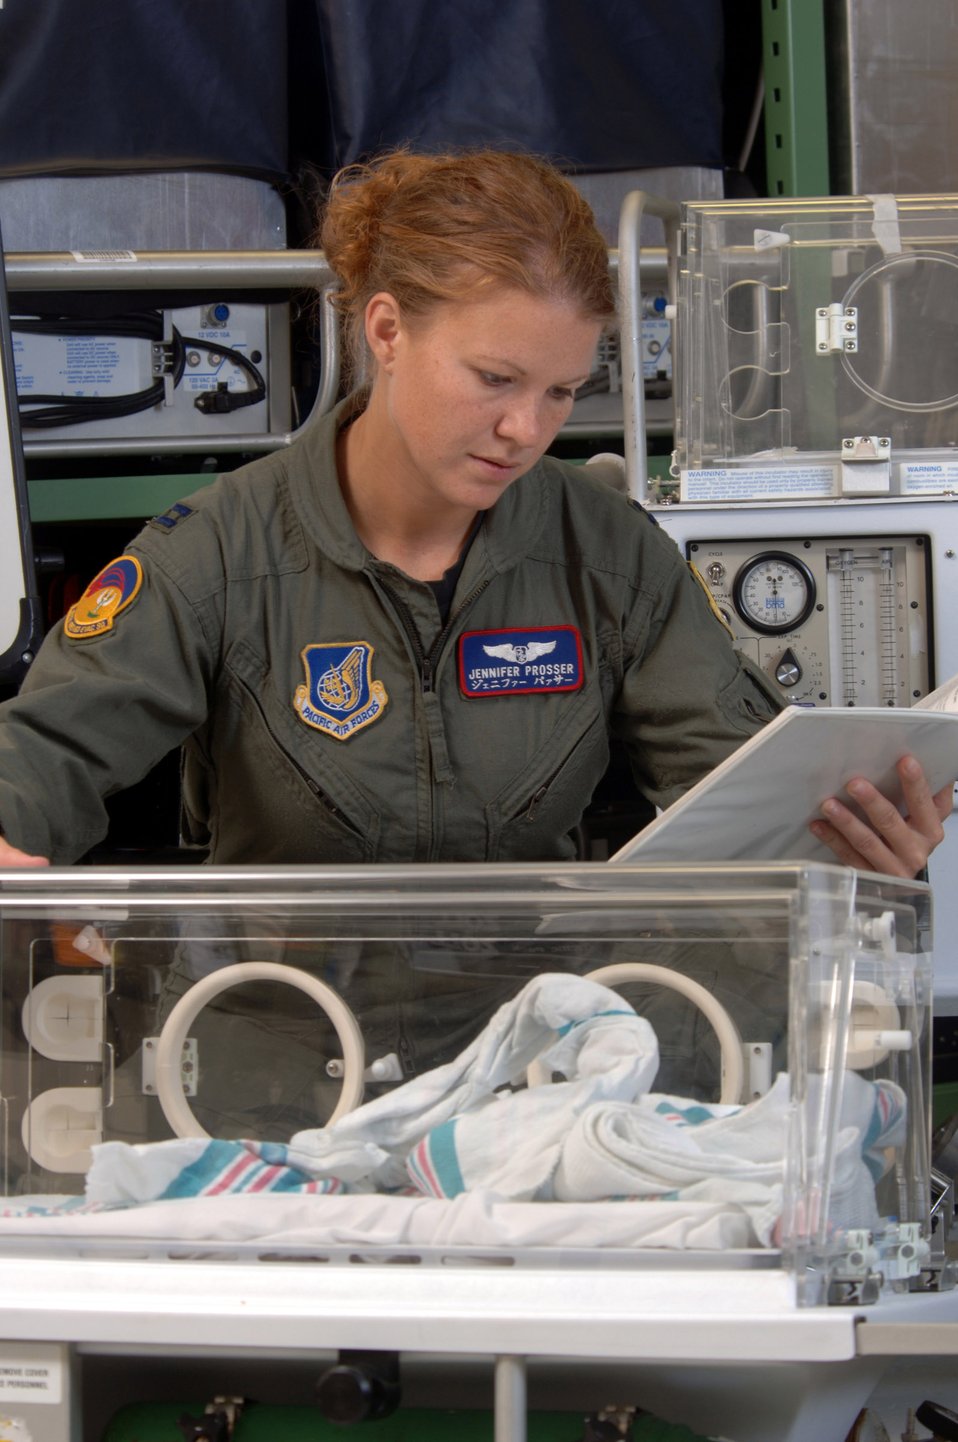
Kadena medics provide lifeline in air

KADENA AIR BASE, Japan -- Capt. Jennifer Prosser checks a neonatal transportation system before a mission here. The mission of the 18th Aeromedical Evacuation Squadron is to provide a flexible, seamless and responsive system capable of prompt and appropriate patient movement. Captain Prosser is a flight nurse with the squadron.